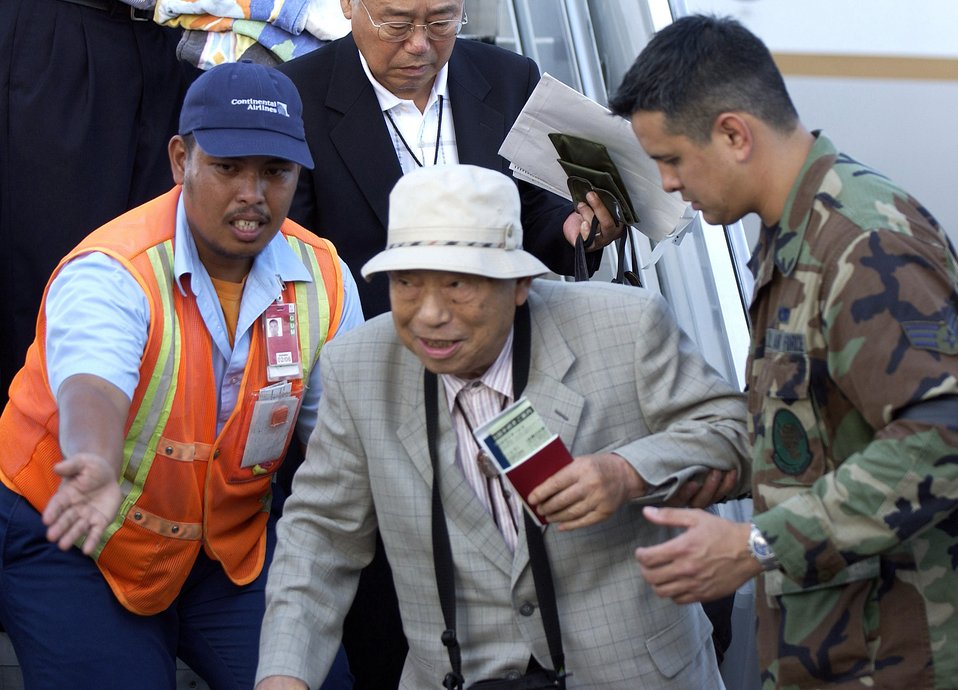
Anderson answers call for help

ANDERSEN AIR FORCE BASE, Guam -- Matumoto Seiji departs an aircraft on the flightline here Aug. 19. Mr. Seiji is just one of more than 800 passengers who arrived safely after their commercial flights were diverted here because of an emergency that temporarily closed Won Pat International Airport.